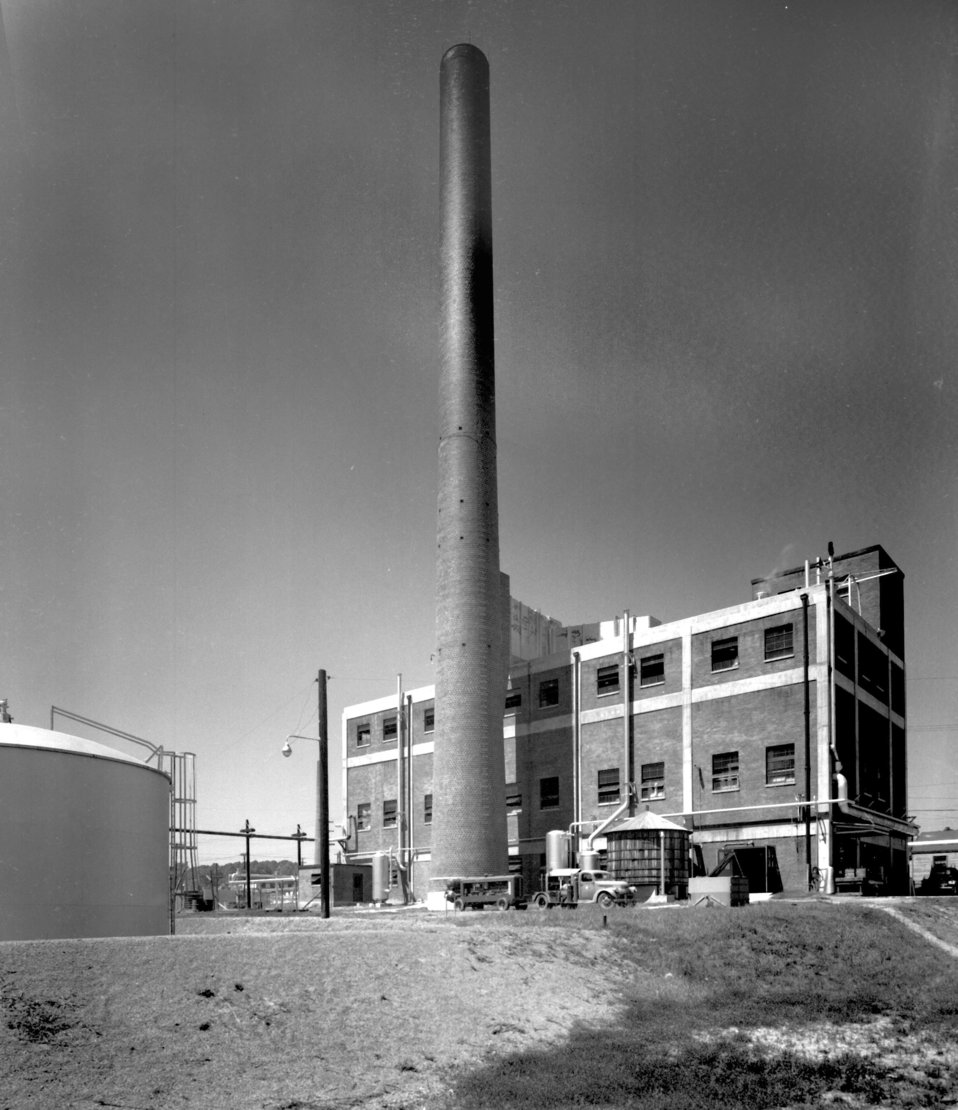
Steam Plant ORNL X-10 Oak Ridge

DOE photo by Jack Tarver

ORNL Steam Plant Blg. 2519 looking NE Oak Ridge Tennessee 7/25/1952